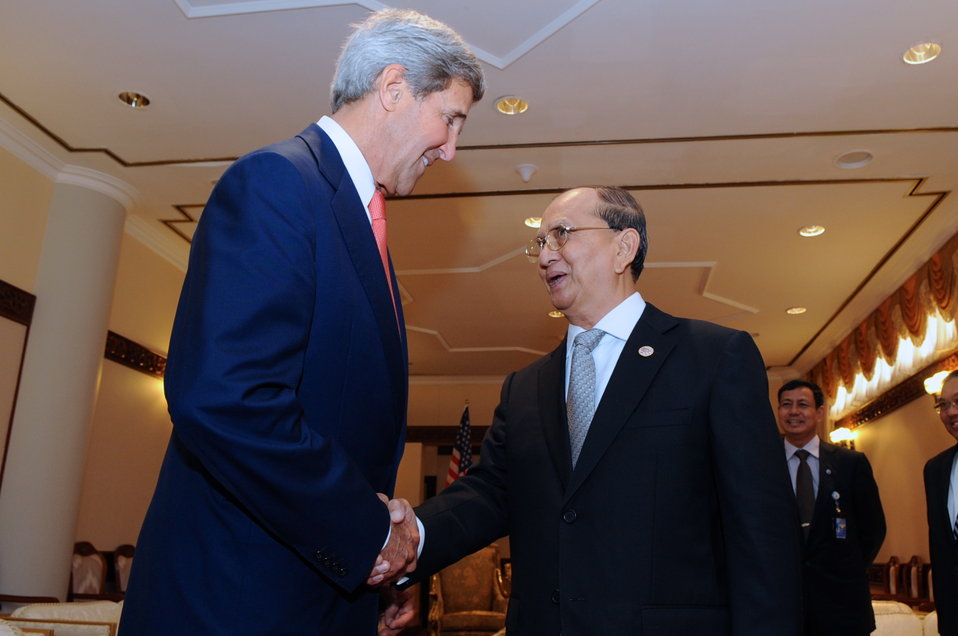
Secretary Kerry Greets Burmese President Thein Seinecretary Kerry Greets Burmese Presdient Thein Sein

U.S. Secretary of State John Kerry shakes hands with Burmese President U Thein Sein before a bilateral meeting preceding the East Asia Summit in Bandar Seri Begawan, Brunei, on October 10, 2013.